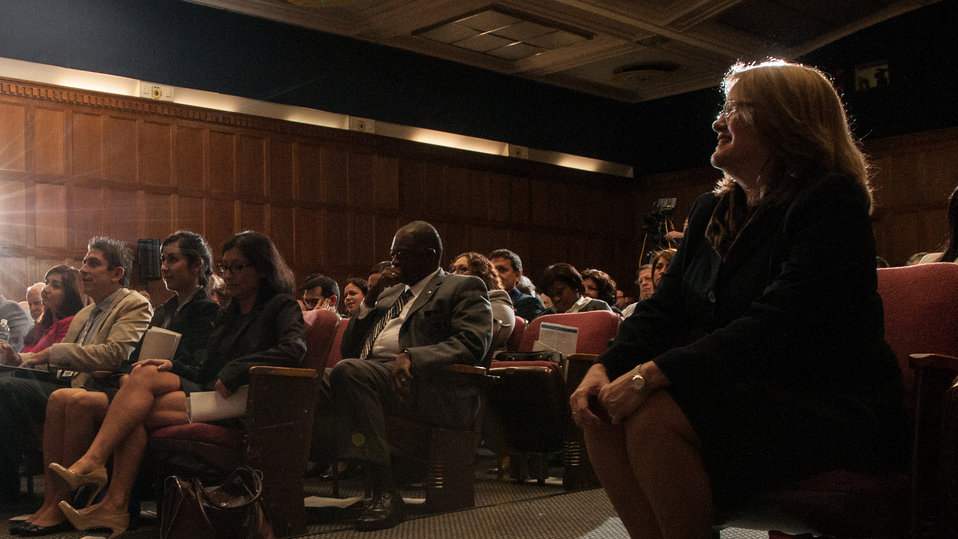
The audience listen to what White House Office of Public Engagement Associate Director Julie Chavez Rodriguez, says, during the U.S. Department of Agriculture (USDA) 2013 National Hispanic Heritage Month ”Hispanics: Serving and Leading our Nation with Pride and Honor,” on Thursday, Sept. 19, 2013, in the Jefferson Auditorium, USDA Headquarters, Washington, D.C.